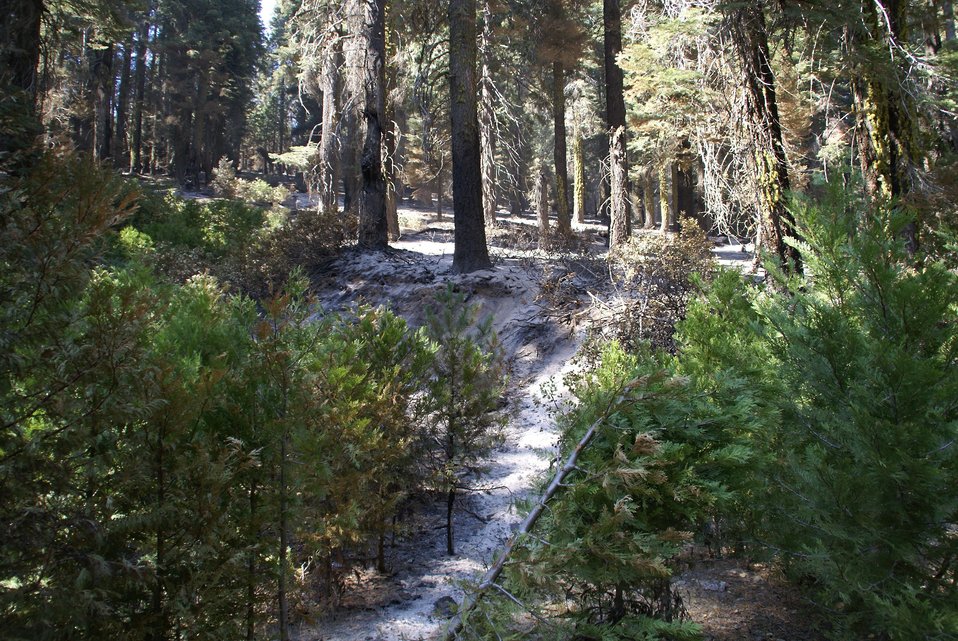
The East side of Bourland drainage area about a half-mile below the 3N01 road shows damage from the Rim Fire. BAER is a rapid assessment of burned watersheds by a BAER team to identify imminent post-wildfire threats to human life and safety property and critical natural or cultural resources on National Forest System lands and take immediate actions to implement emergency stabilization measures before the first major storms. Fires result in loss of vegetation exposure of soil to erosion and increased water runoff that may lead to flooding increased sediment debris flows and damage to critical natural and cultural resources. BAER team members implement seeding and mulching installation to prevent erosion, erect temporary water run-off control structures that will protect recovering areas, and installation of warning signs, replace safety related facilities, remove safety hazards, prevent permanent loss of habitat for threatened and endangered species, and prevent the spread of noxious weeds and protect critical cultural resources. The Rim Fire in the Stanislaus National Forest near in California began on Aug. 17, 2013 and is under investigation. The fire has consumed approximately 256,169 acres and is 84% contained.